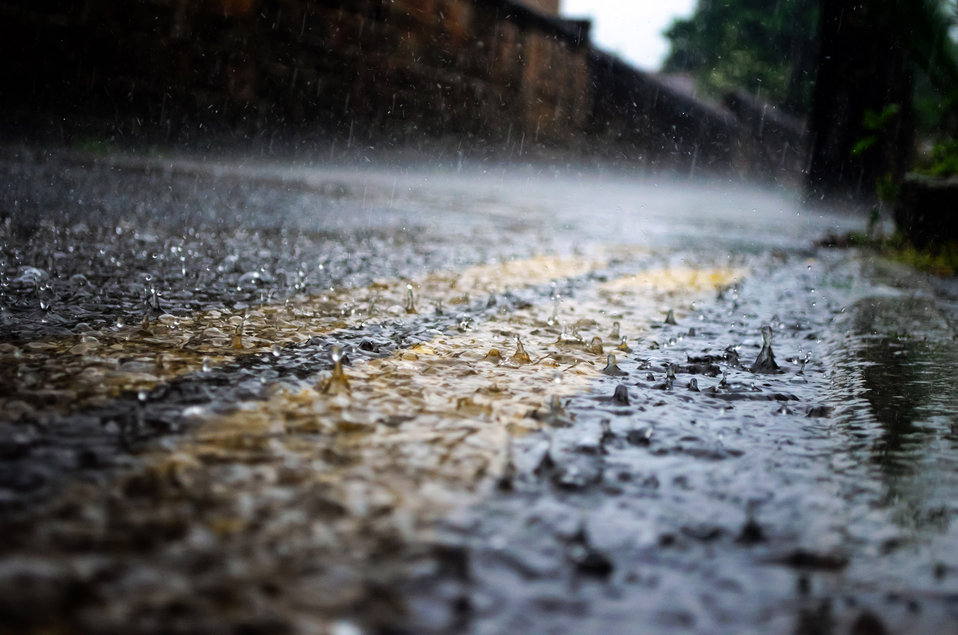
Rain - background.